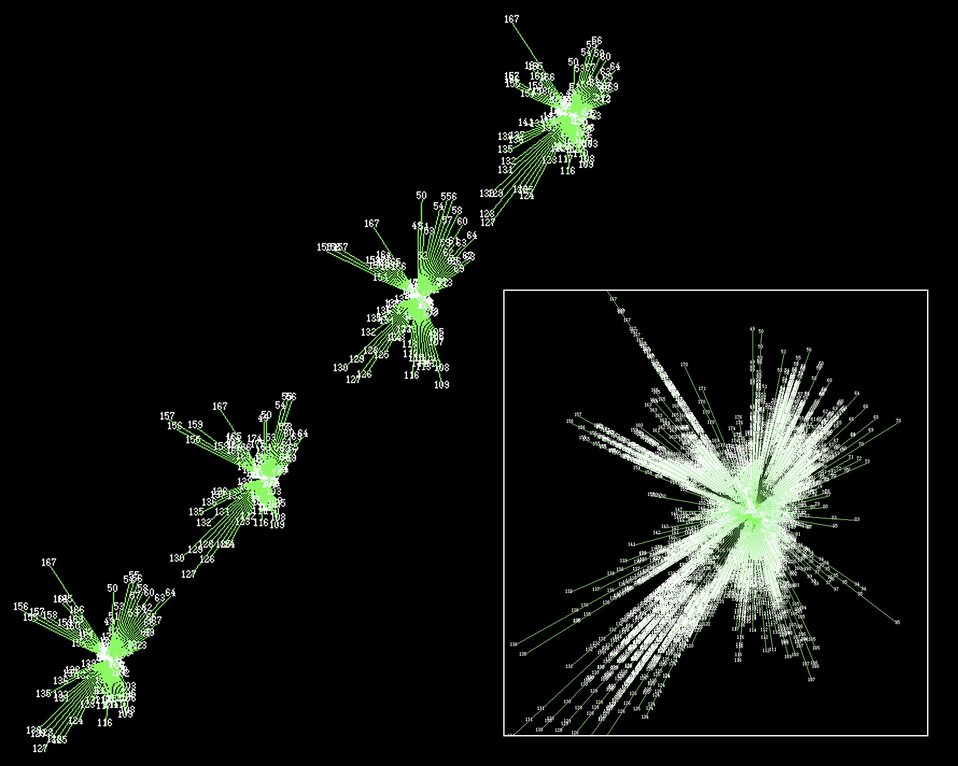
THE STARSTRUCK VISUALIZATION DEVELOPED AT THE PACIFIC NORTHWEST NATIONAL LABORATORY.

IN THE FIELD OF COMPUTER SCIENCE THE STARSTRUCK VISUALIZATION IS INTENDED TO REPRESENT DIFFERENT LEVELS OF GRANULARITY IN INFORMATION SPACES AND TO GIVE MEANING TO THE SHAPE OF CLUSTERS IN THE INFORMATION SPACE. THE VISUALIZATION SHOWS THERMATIC PATTERNS OVER A GROUP OF DOCUMENTS. THE INDIVIDUAL PLANAR STARBURSTS FOR THE GROUP ARE ALIGNED ALONG AN INVISIBLE ROD IN SPACE.